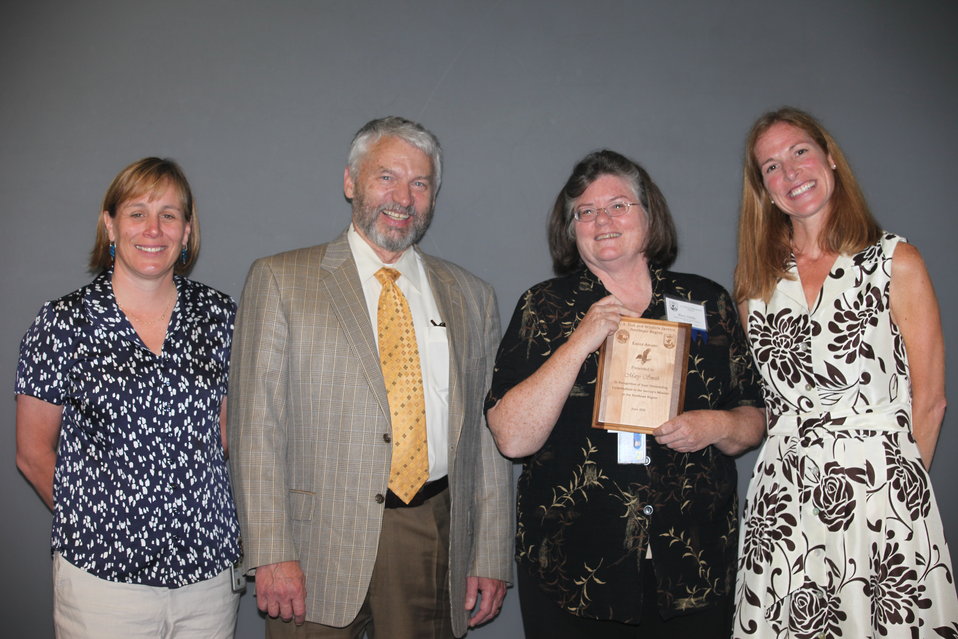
Mary Smith of the Regional Office for Contracting and General Services recieved the Eagle Award.
From left to right: Deputy Regional Director Deb Rocque, Deputy Director Rowan Gould, Mary Smith and Regional Director Wendi Weber